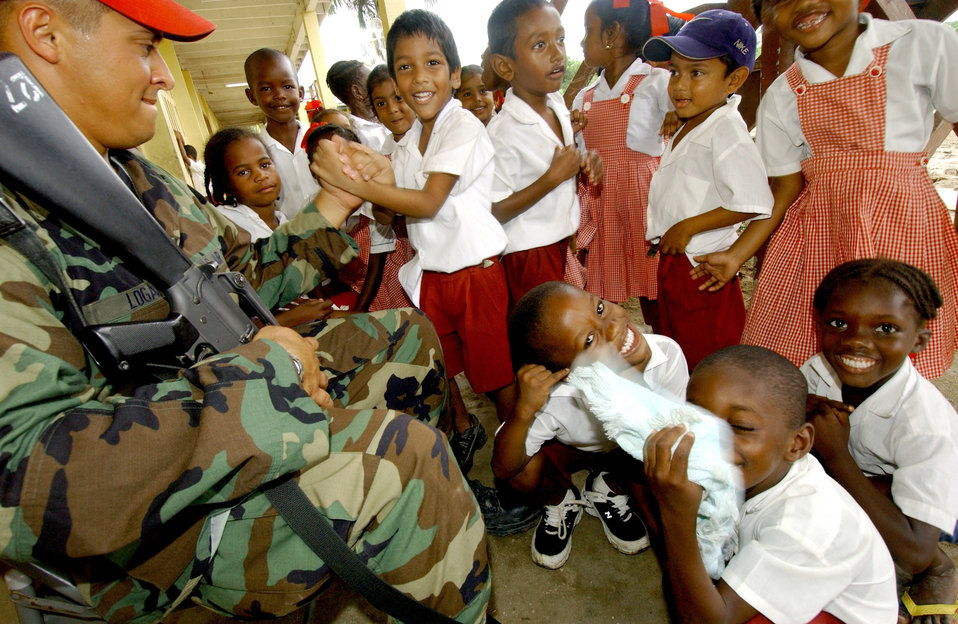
Helping in Guyana

TIMERHRI, Guyana -- Senior Airman Robert Logan plays with students from a primary school at a construction site here June 23 during exercise New Horizons 2004-Guyana. About 200 U.S. Airmen, Soldiers and Sailors are participating in the four-month joint training exercise co-sponsored by U.S. Southern Command and the Guyana defense force. A combined team of engineers and medics is working on construction projects and medical-training activities. Airman Logan is assigned to the 820th Red Horse Squadron based at Nellis Air Force Base, Nev.